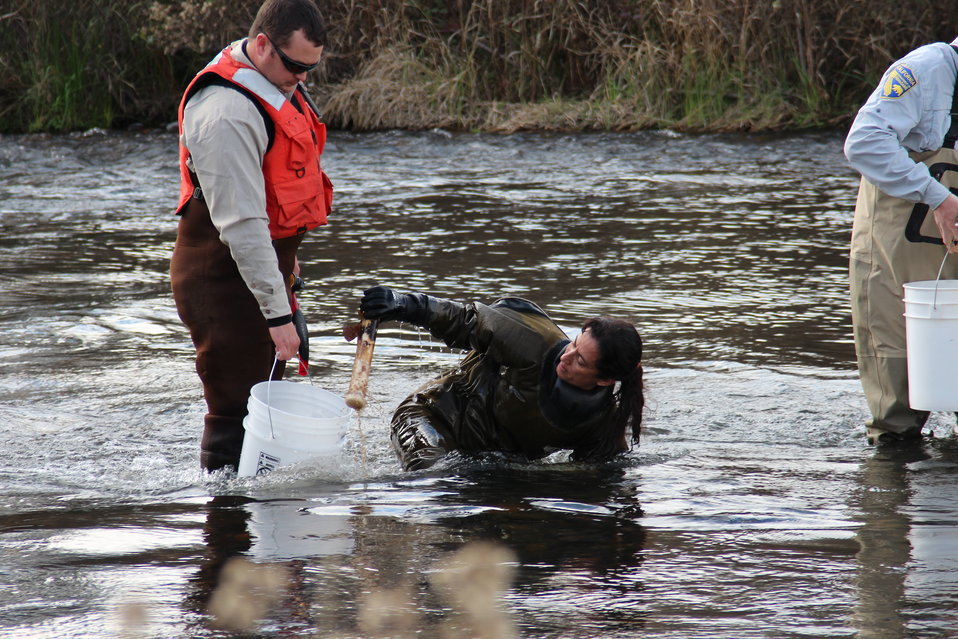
USFWS biologists remove salmon egg tubes from the San Joaquin River

Service biologists remove tubes of salmon eggs from the San Joaquin River after a month to check on the egg hatch rates at various sites.